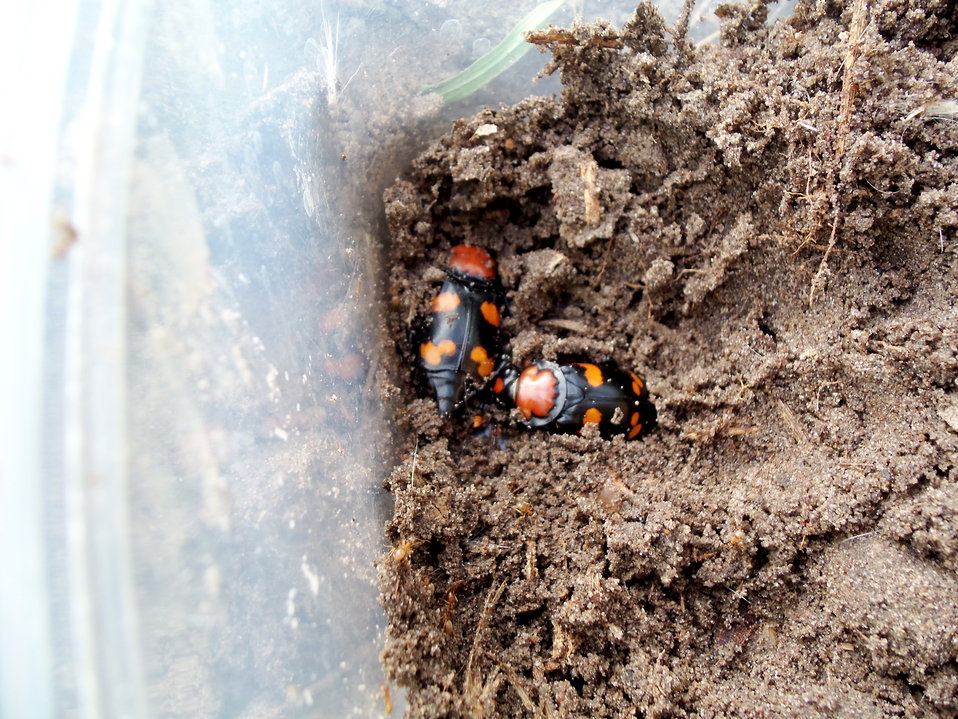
American burying beetles found while surveying during early May 2012 in Nebraska.

Photo Credit: Jamie Jones / USFWS

Photo Contest Entry #91